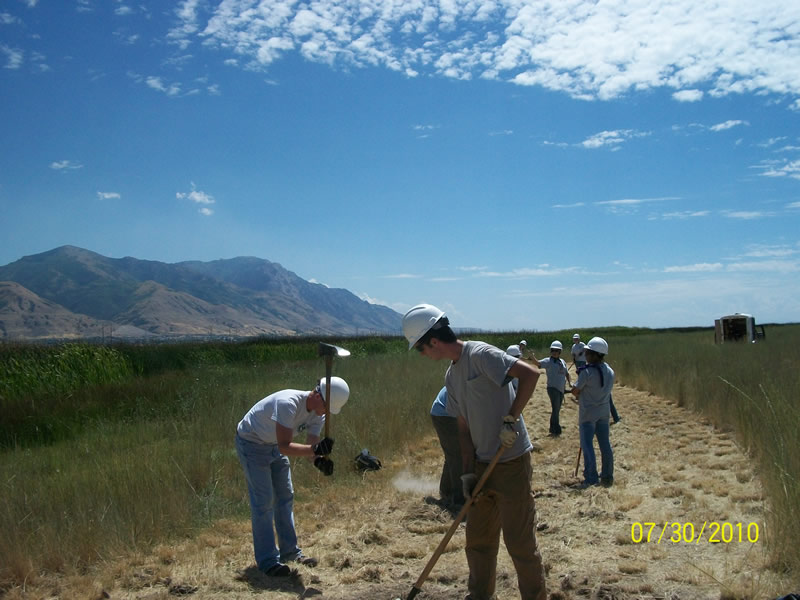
Crews Work on Trail Project

The Youth Conservation Corps and Utah Conservation Corps work together in the hot sun to increase a trail near the James V. Hansen visitor center at the Bear River Migratory Bird Refuge in Utah.